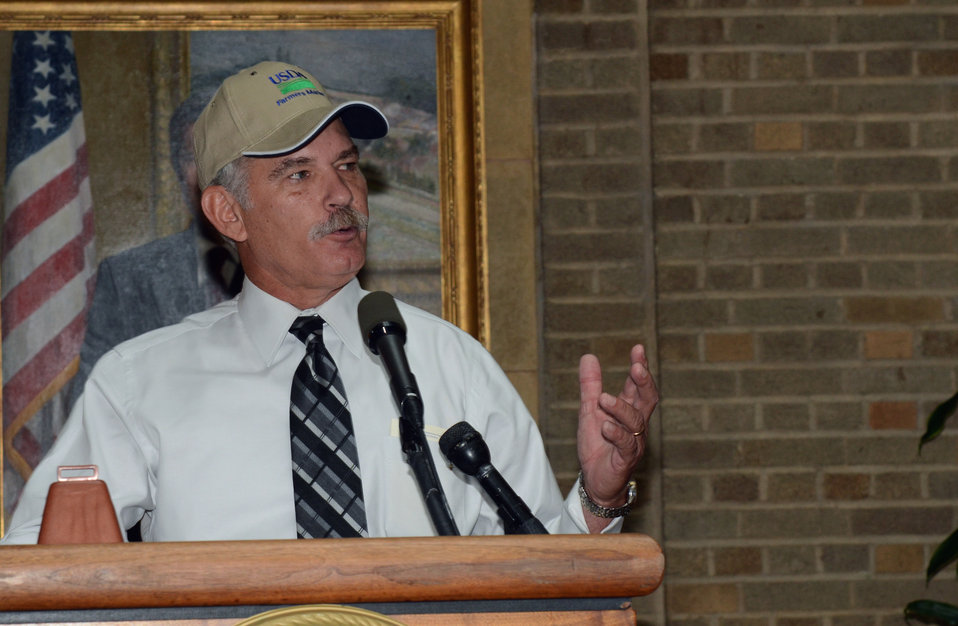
Agriculture Acting Deputy Secretary Michael Scuse makes remarks at the opening of the USDA Farmers Market at the U.S. Department of Agriculture (USDA) in Washington, D.C. on Friday, Jun. 7, 2013.